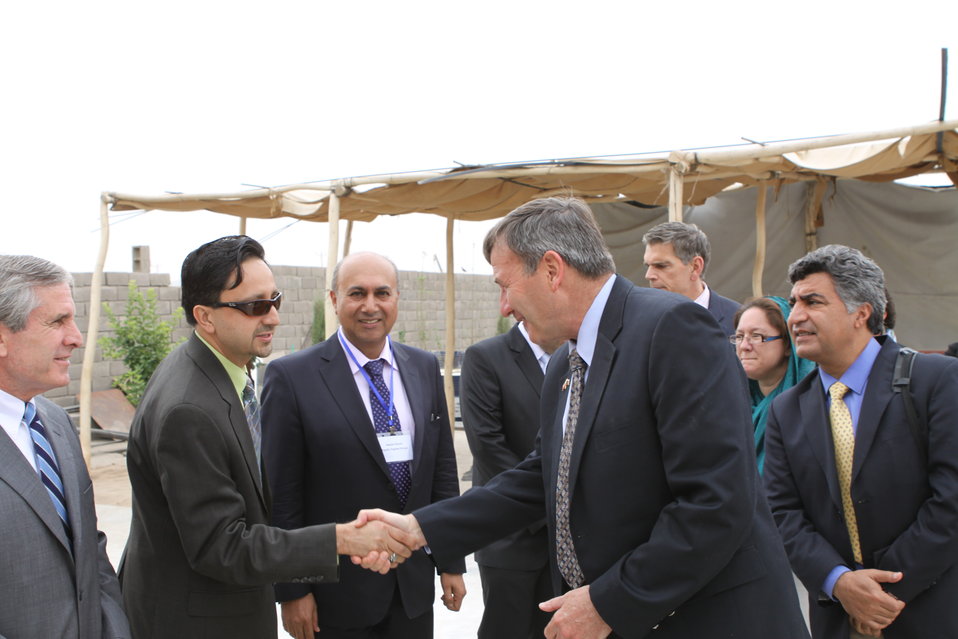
100525 Hirat Marble Conference 047